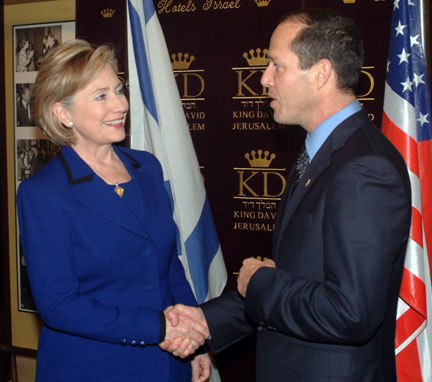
Secretary Clinton meets Jerusalem Mayor Nir Barkat and the King David hotel in Jerusalem March 3, 2009.